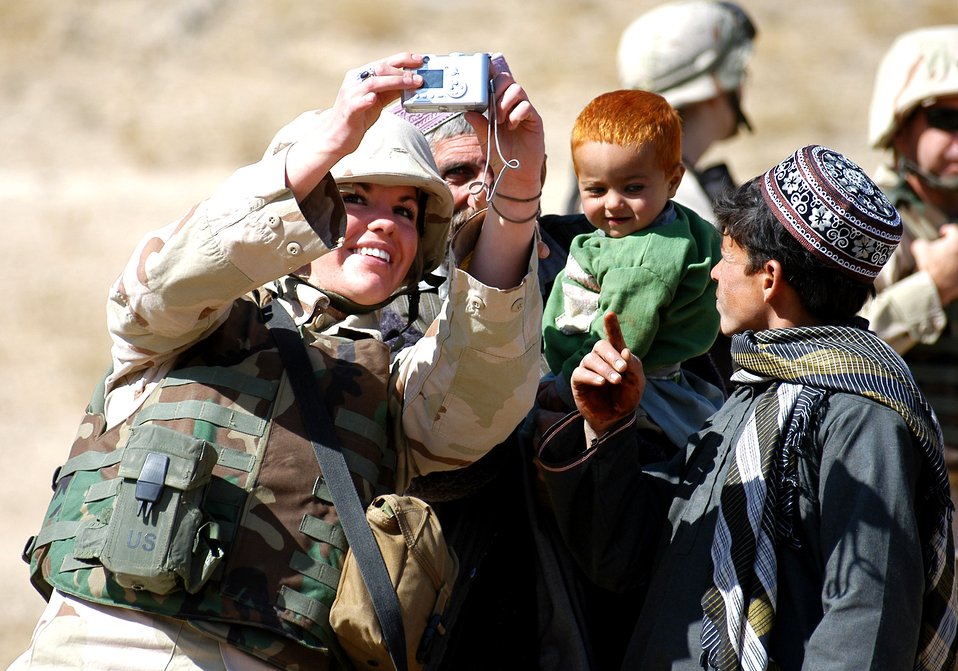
Spreading cheer

PARWAN PROVINCE, Afghanistan (AFPN) -- Senior Airman Tess Pottratz joins local villagers in a photo opportunity during an adopt-a-village visit here. Airman Pottratz and others took time to spread some cheer and share smiles with the people of Afghanistan as part of the humanitarian relief effort. More than 1,200 pounds of winter clothes, blankets, school supplies and toys were distributed to the local village. Airman Pottratz is deployed to Bagram Air Base from McChord Air Force Base, Wash.